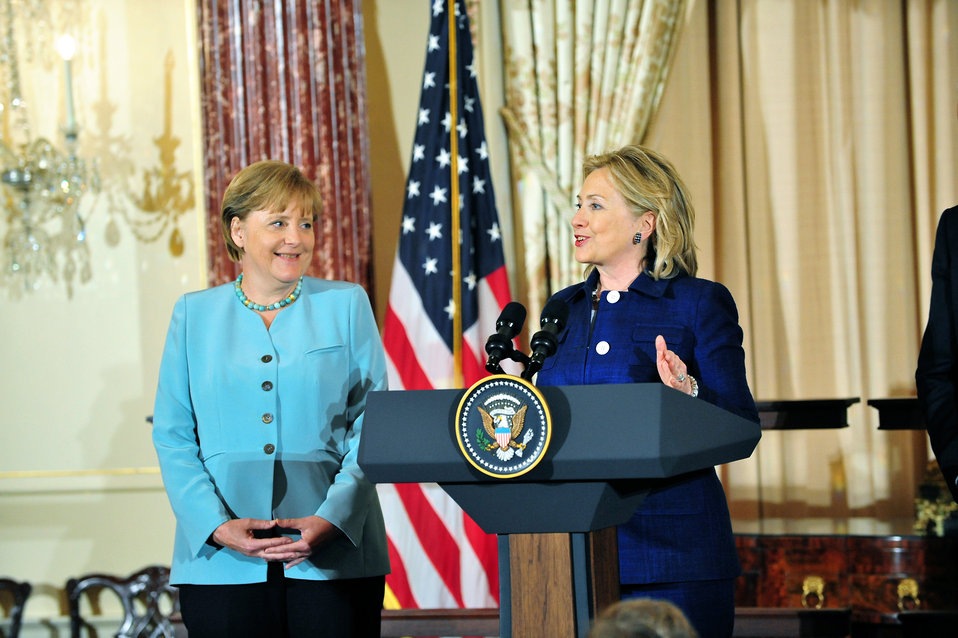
Secretary Clinton Delivers Remarks

U.S. Secretary of State Hillary Rodham Clinton delivers remarks at a State Luncheon hosted in honor of German Chancellor Angela Merkel, at the U.S. Department of State in Washington, D.C., on June 7, 2011. The luncheon was co-hosted by U.S. Vice President Joseph Biden and Dr. Jill Biden, and Secretary Clinton.